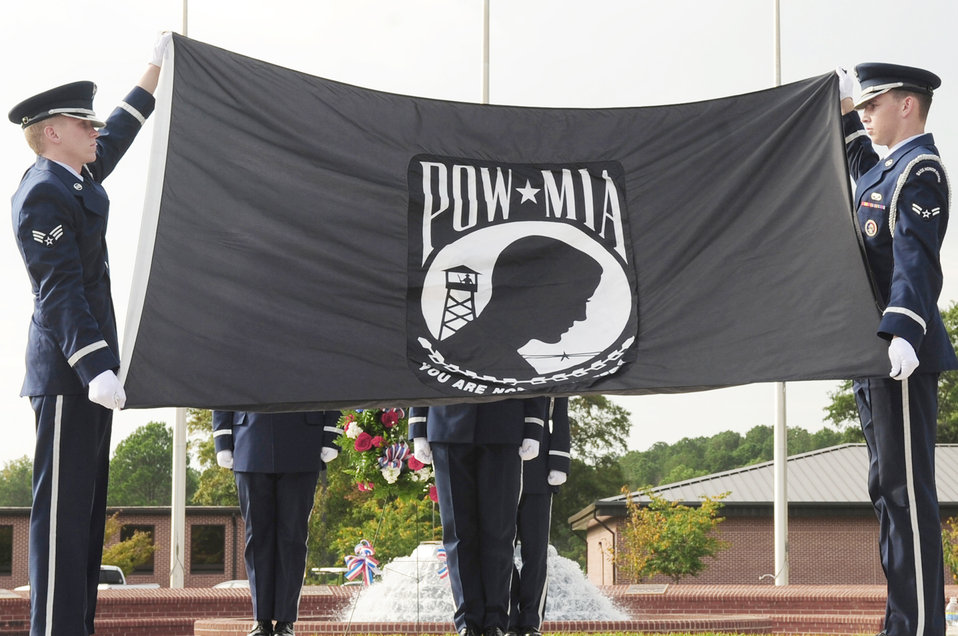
Never forgotten

Members of the 4th Fighter Wing Honor Guard at Seymour Johnson Air Force Base, N.C., fold the Prisoner of War/Missing in Action flag during a ceremony Sept. 18, 2009. Many POWs, now veterans, from the local area attended to pay their respects and were honored for their sacrifices.